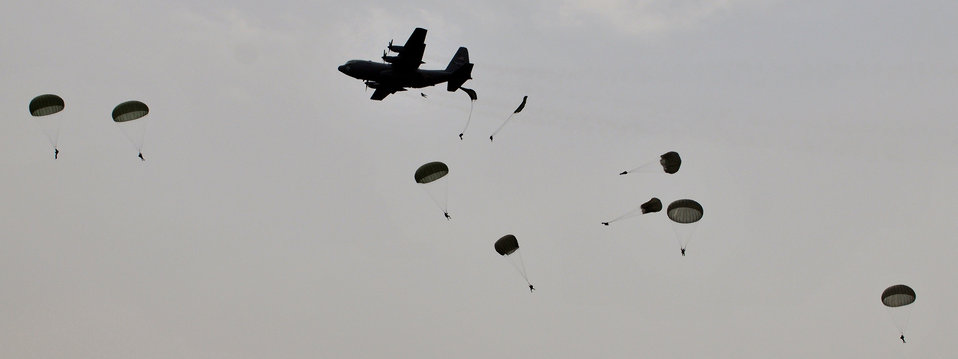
Airmen commemorate D-Day

An MC-130P Combat Shadow from the 67th Special Operations Squadron drops static-line paratroopers over the famous